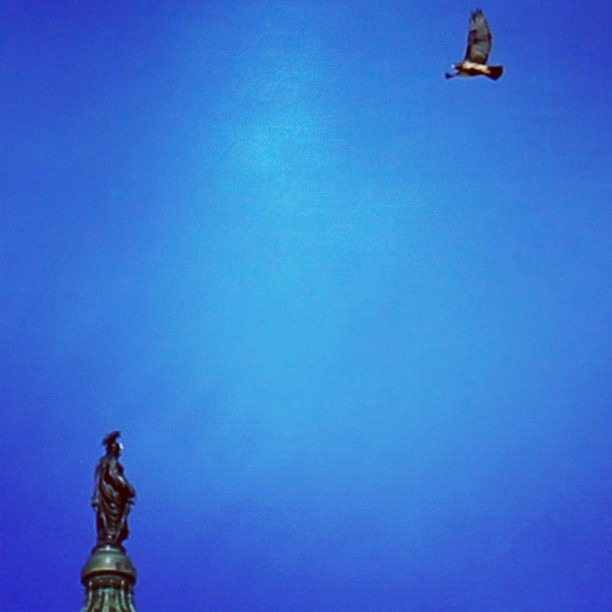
Exercise your freedom, vote today. #election2012